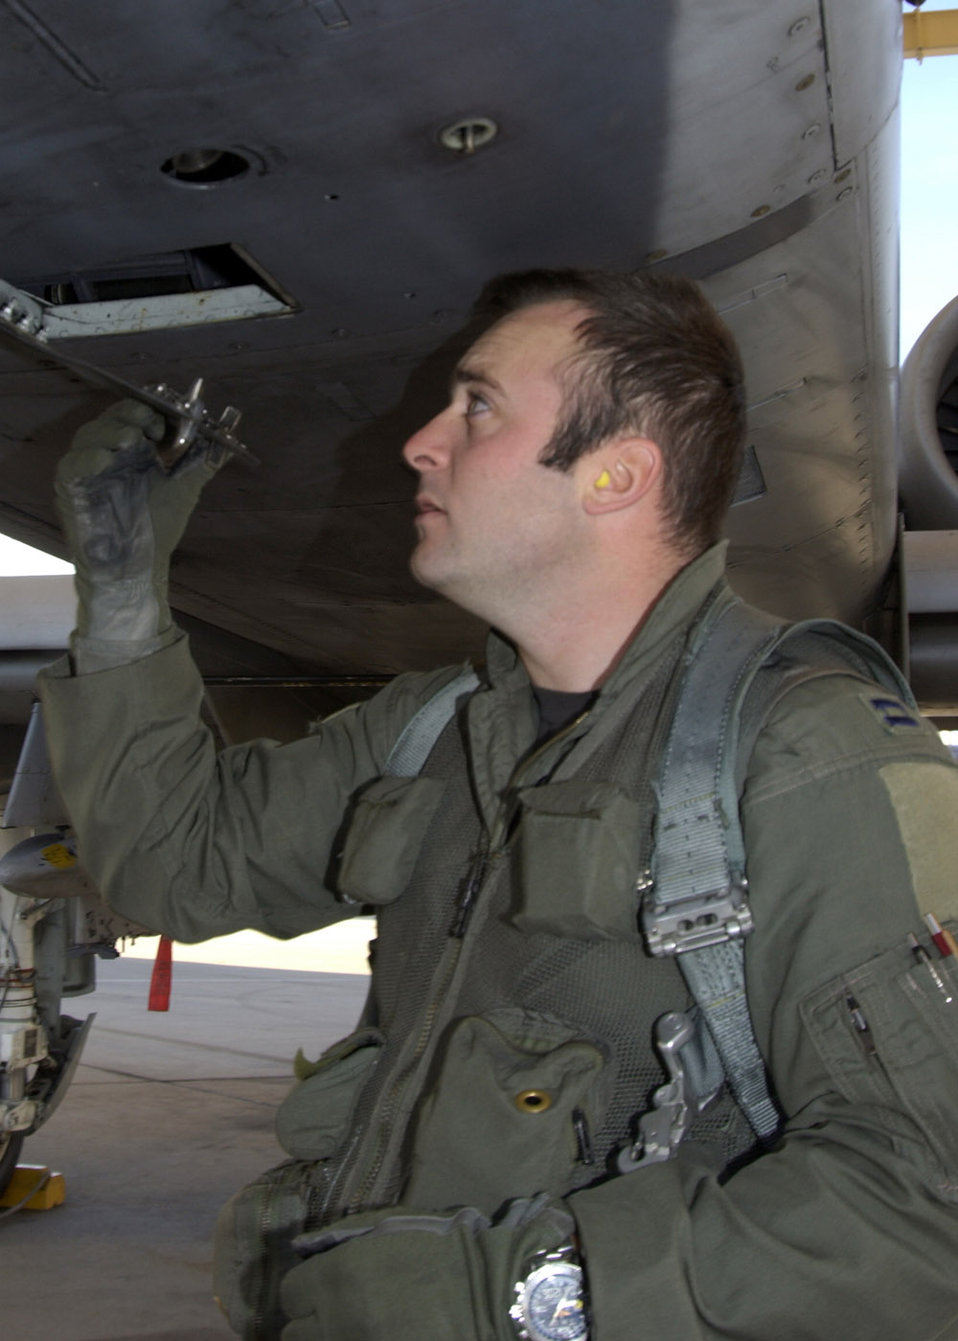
Preflight inspection

DAVIS-MONTHAN AIR FORCE BASE, Ariz. (AFPN) -- Capt. Scott Michalowski does a preflight inspection before takeoff. The 357th Fighter Squadron continuously trains for real world deployment situations. Captain Michalowski is a pilot with the 357th FS.